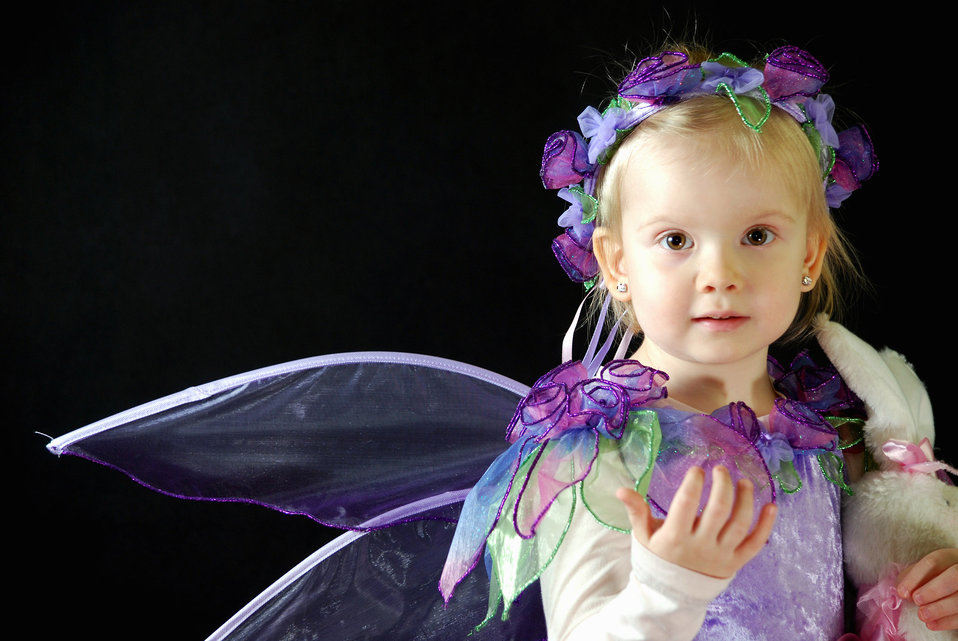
Magic elfin.